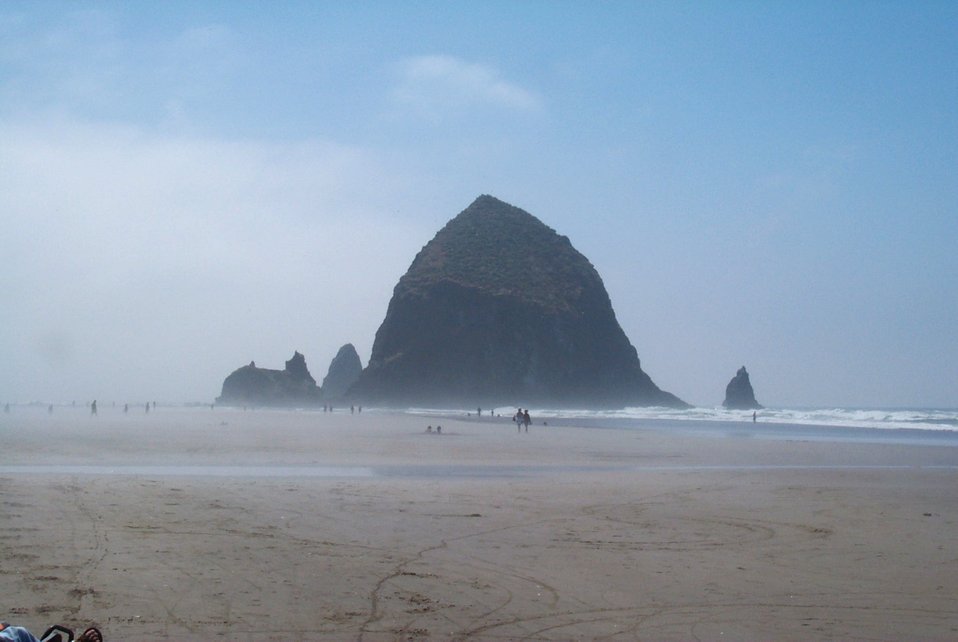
Looking south towards Haystack Rock at Cannon Beach.